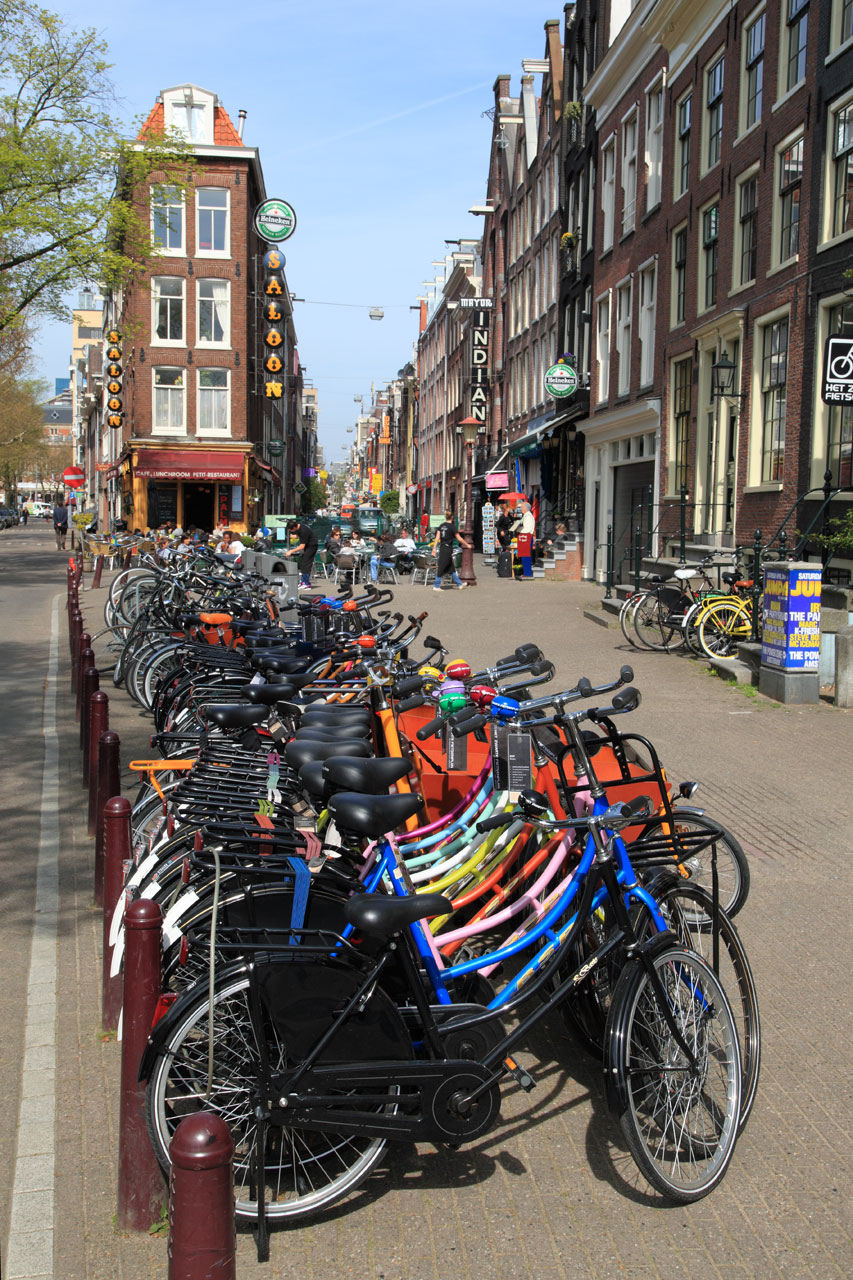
Bicycles in amsterdam

Bicycles parked on street in amsterdam.